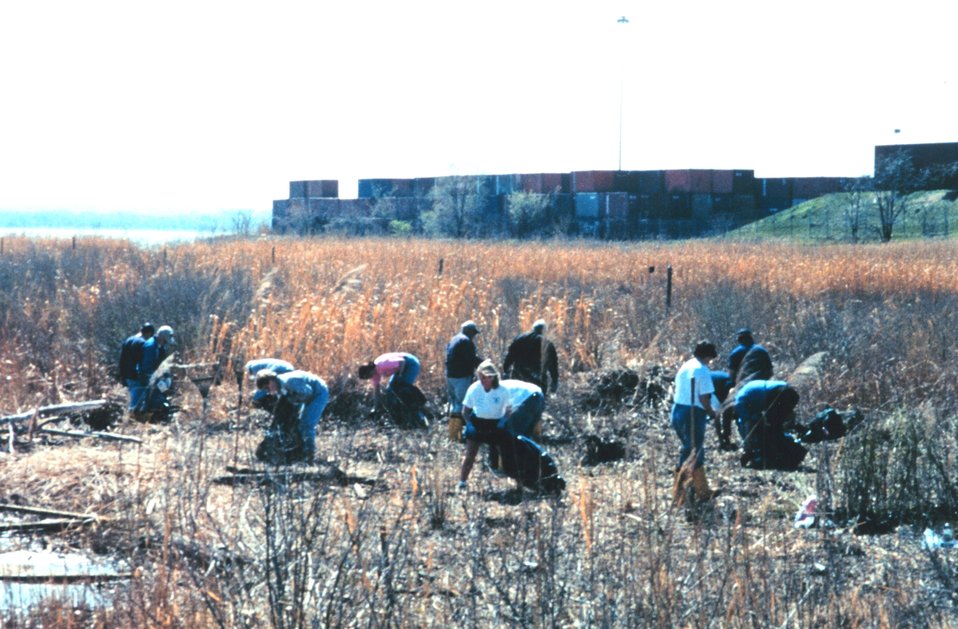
Volunteers helping clean up the wetlands and waterfront area around Fort McHenry in Baltimore Harbor.